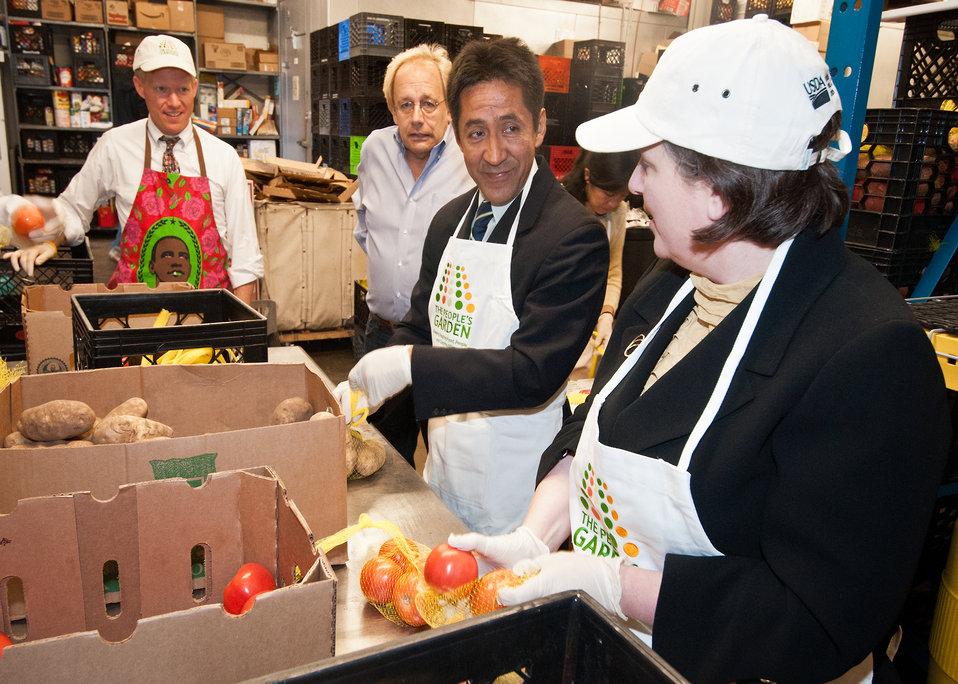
From left: Max Finberg, Director, Center for Faith Based and Neighborhood Partnerships, Charles Meng, Director, Arlington Food Assistance Center, Walter Tejada, Arlington County Commissioner and Dr. Kathleen Merrigan Deputy Secretary discuss providing supplemental and nutritious food free of charge to Arlington families who cannot afford to purchase all the food they need at the AFAC in Arlington, Virginia, Thursday, January 12, 2012. Agriculture Secretary Tom Vilsack designated January 12, 2012 as the first United States Department of Agriculture’s Martin Luther King Day of Service to recognize Dr. King’s contributions to the Civil Rights Movement. The center receives United States Department of Agriculture foods through The Emergency Food Assistance Program (TEFAP) administered by the USDA Food and Nutrition Service from the Capital Area Food Bank.